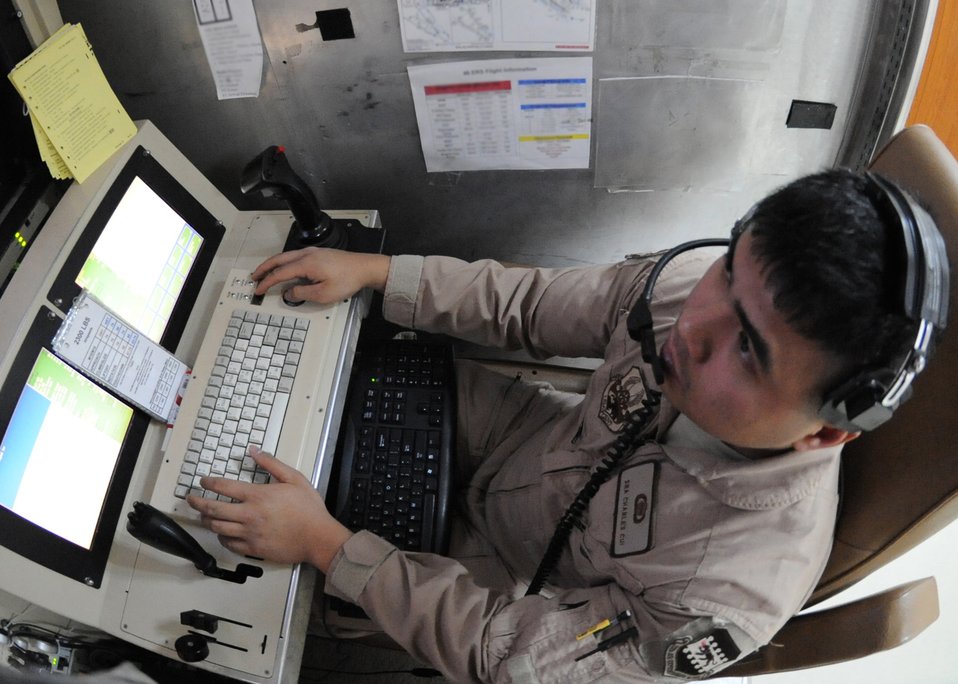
Predator takes flight

Senior Airman Charles Cui, a 46th Expeditionary Reconnaissance and Attack Squadron sensor operator at Joint Base Balad, Iraq, assists with the flight of an unmanned MQ-1 Predator Feb. 13. The Predator system is made up of the ground-control system, a satellite link, personnel and the aircraft. Airman Cui is deployed from Creech Air Force Base, Nev.